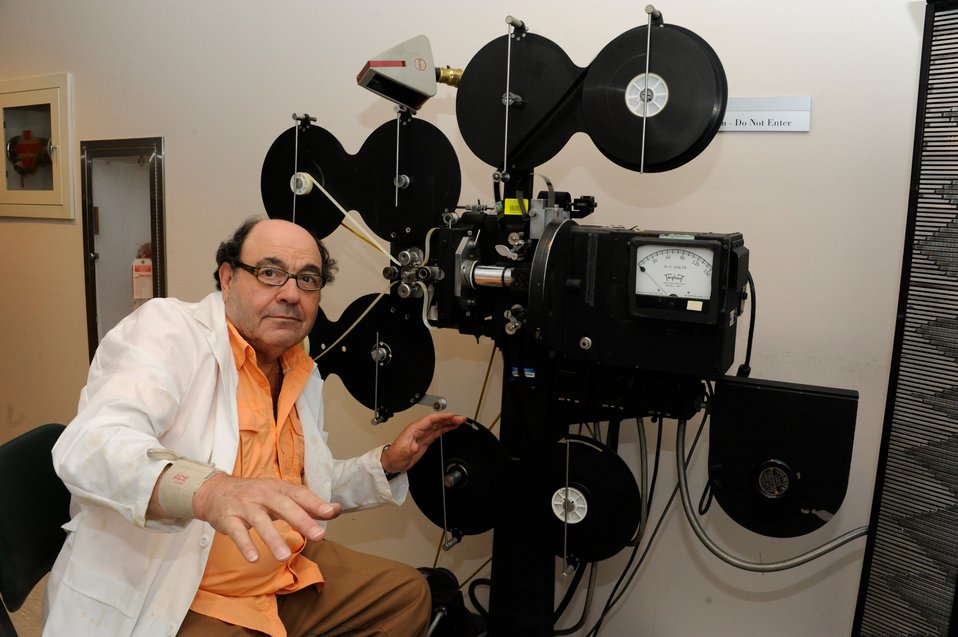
Yosh (Yehoshua Yungshten) was an uncooperative model when trying to shoot the 1952 recreation photos. We love the resulting photo.; Location: Archives 2 - Motion Picture Preservation Lab, College Park, MD